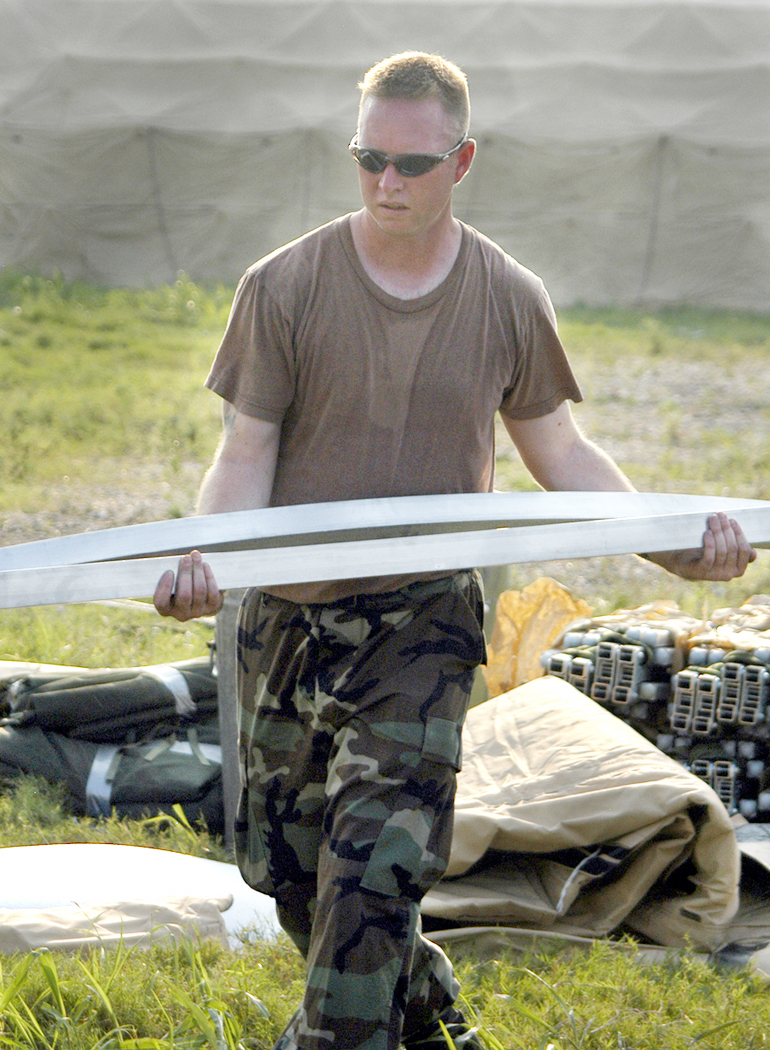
Tent city

NEW ORLEANS -- Staff Sgt. Robbie Dunn hauls shelter frame pieces Sept. 3 at Louis Armstrong International Airport here. He is part of a unit deployed to the airport to begin construction on a massive tent city that will house Airmen attending to Hurricane Katrina victims. Sergeant Dunn is a 49th Materiel Maintenance Group utility technician from Holloman Air Force Base, N.M.